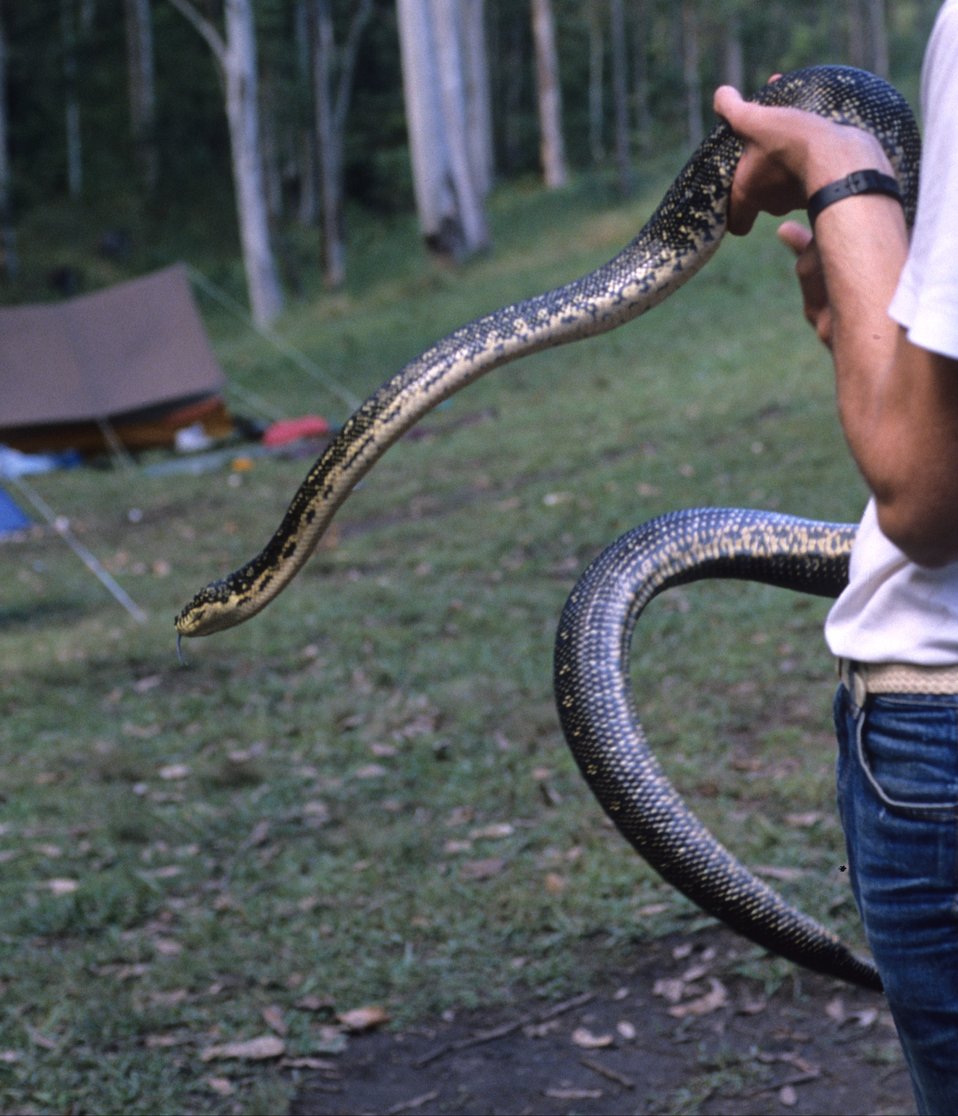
A large constricting snake.